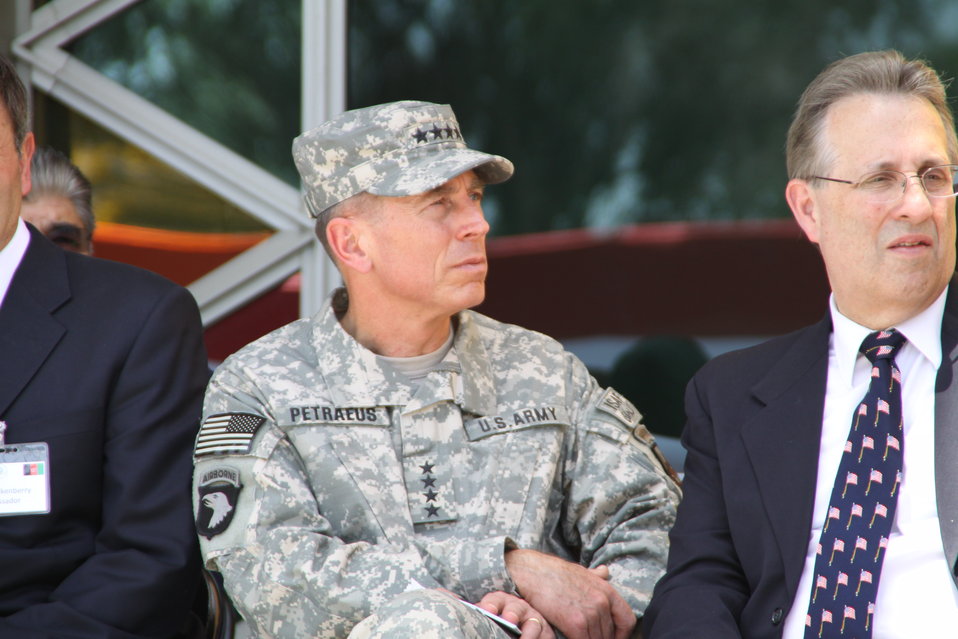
Kabul Official July 4th Celebration